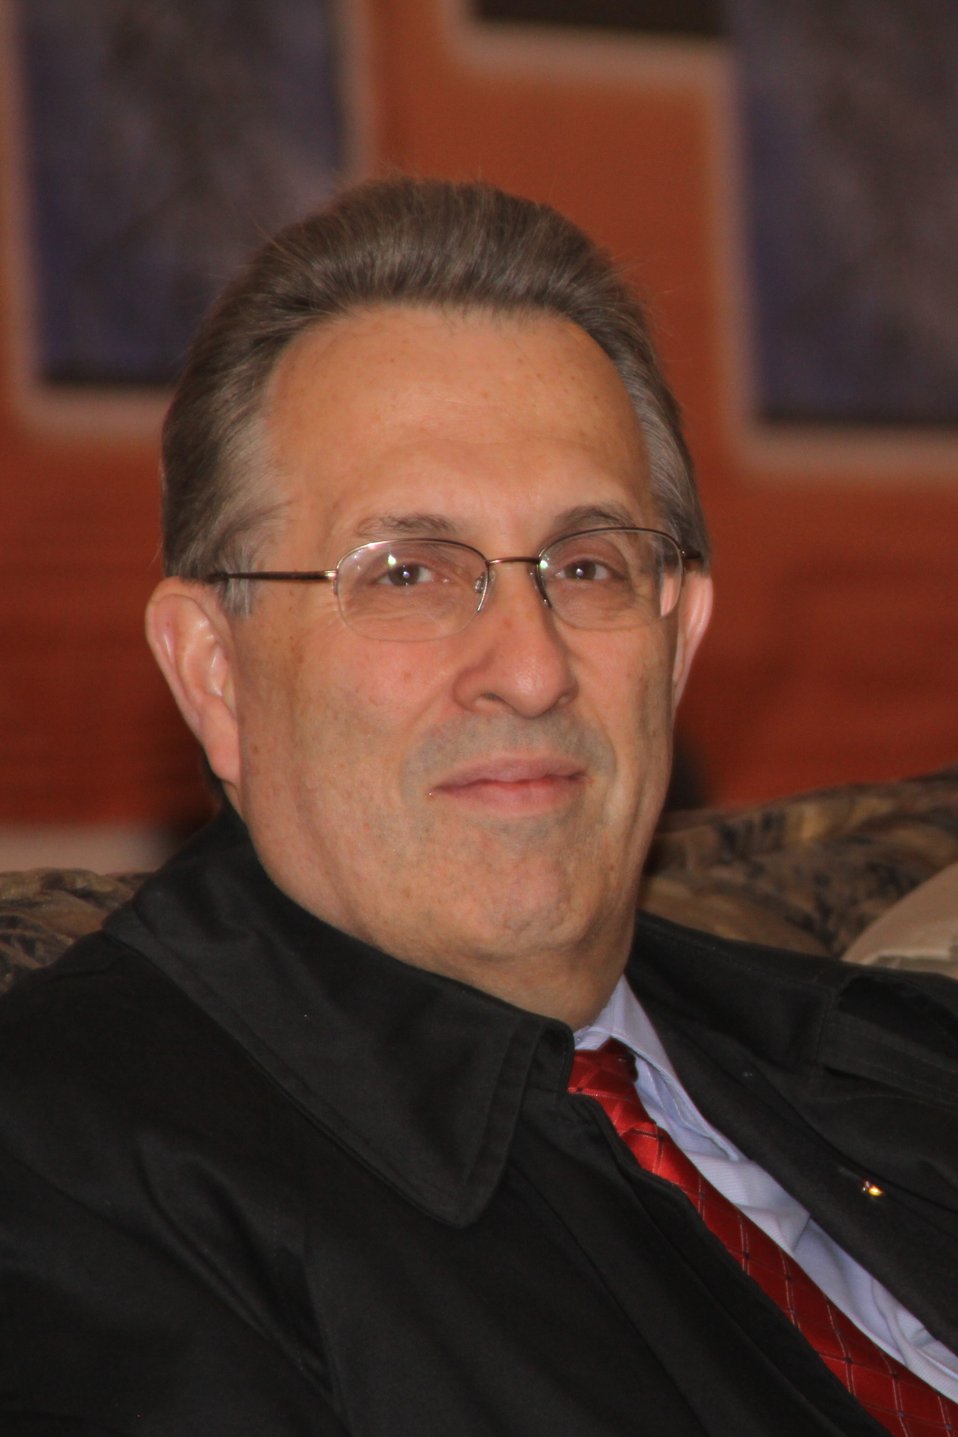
U.S. Ambassador E. Anthony Wayne